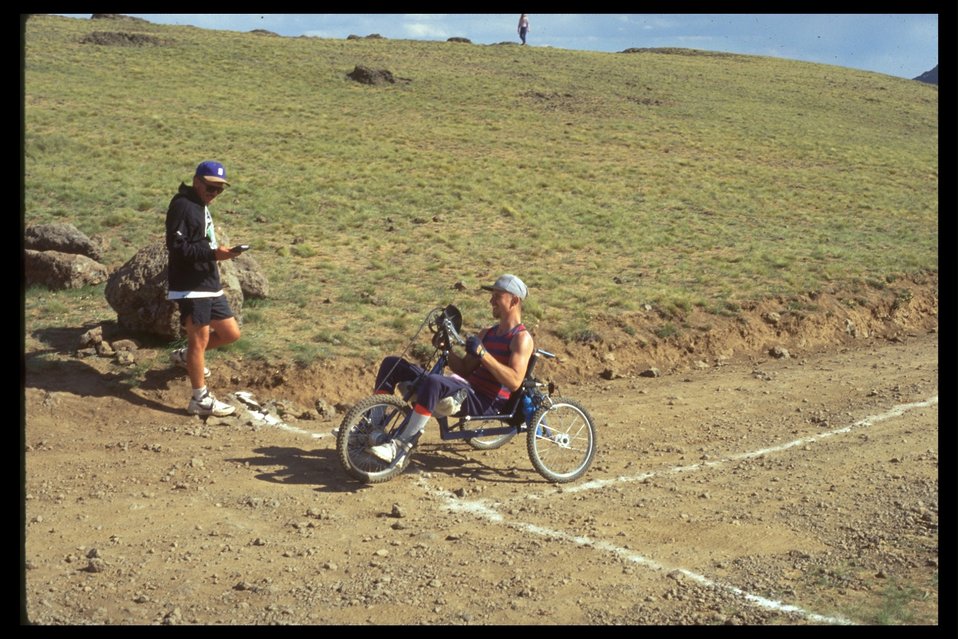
Steens Rim Run wheelchair participant, Wade Bissonnett, on North Steens Loop Rd.